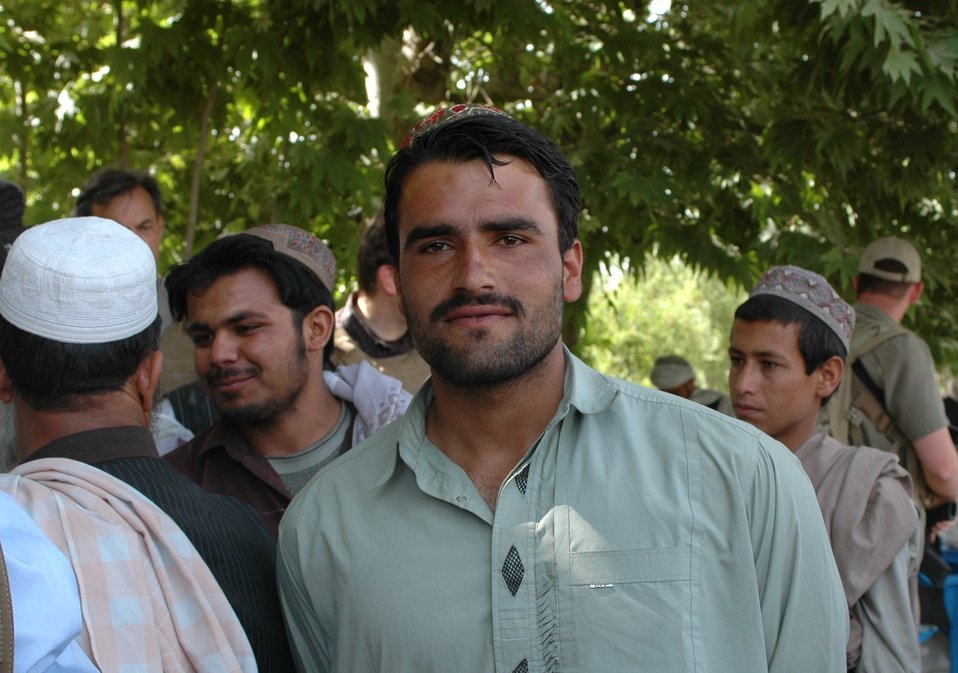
Dr Shah Visits Argandab April 10, 2010